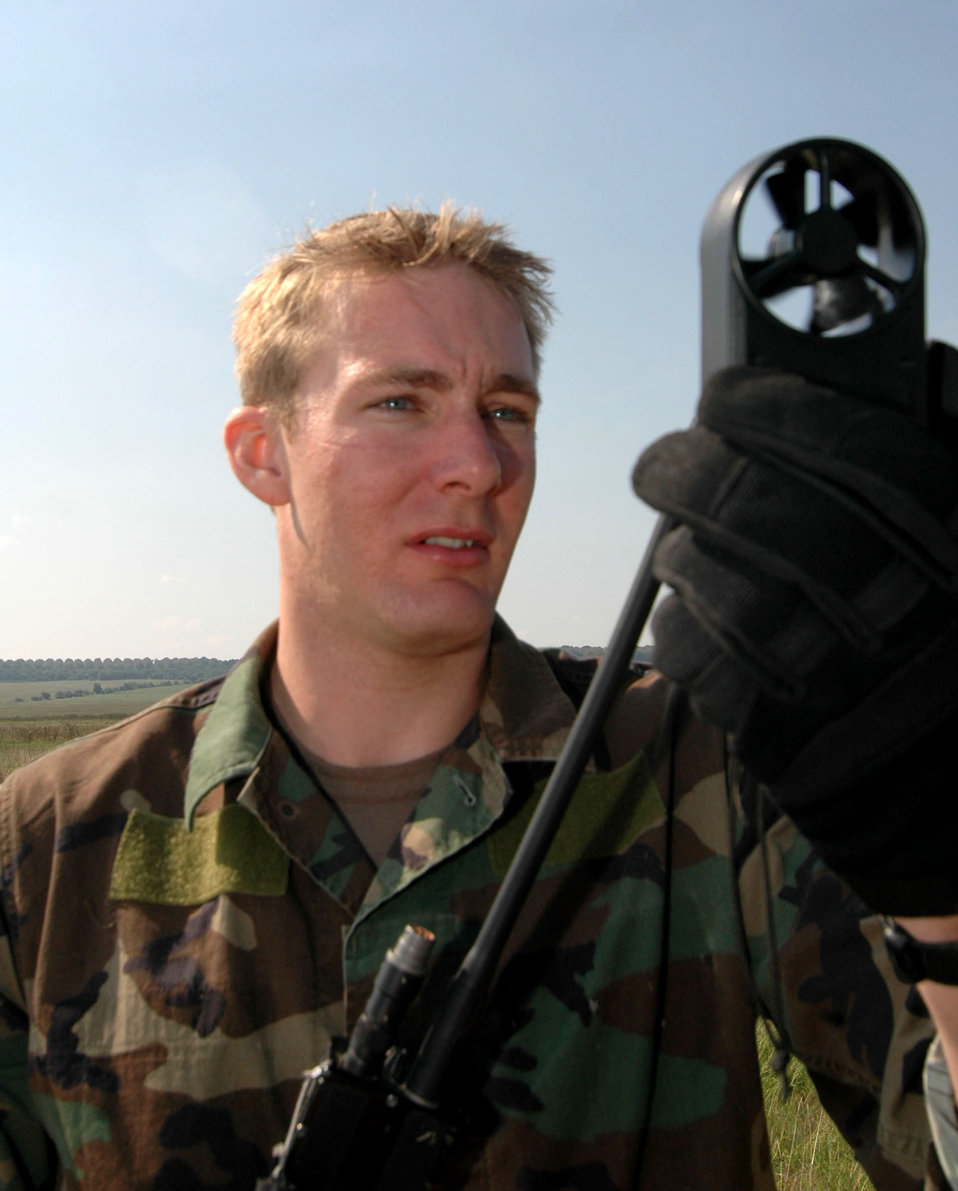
Rescue squad brings experience to Cooperative Key

PLOVDIV, Bulgaria -- Senior Airman Kristopher Abel uses a wind indicator to gauge the weather for a landing site for two other pararescuemen. He is one of about 50 56th Rescue Squadron Airmen from Naval Air Station Keflavik, Iceland, who are here for exercise Cooperative Key 05.